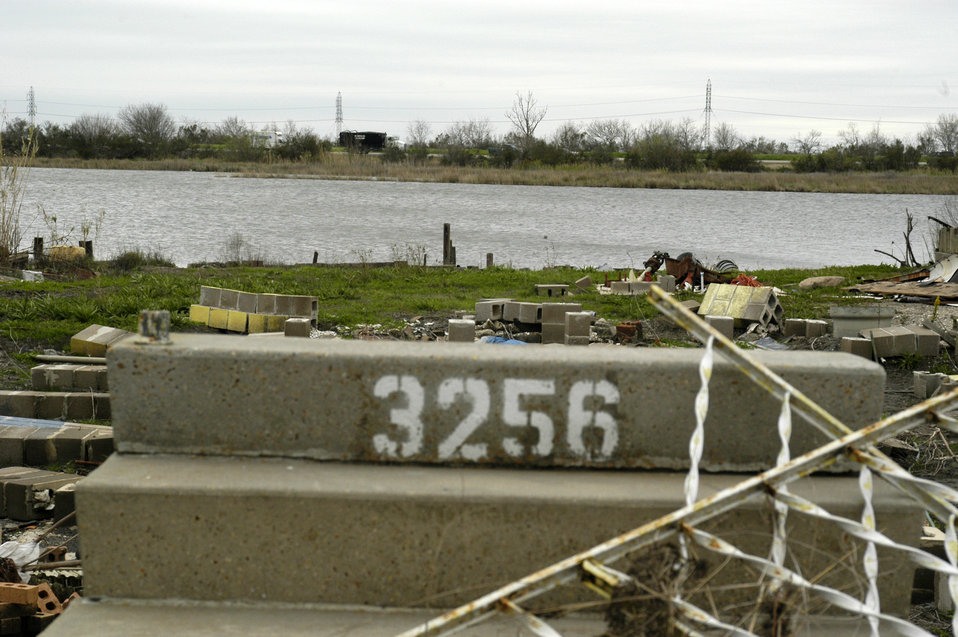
Homes built along the many canals in New Orleans, LA, were washed away by Hurricane Katrina’s 20-foot storm surge that overwhelmed the city’s levees. All that remained of this home was the cement steps leading to the front door. Hurricane Katrina was the 6th strongest hurricane in U.S. history and the 5th deadliest. Katrina made landfall on Monday morning, August 29, 2005 as a Category 3 hurricane with sustained winds of 125 mph with over a 20-foot storm surge. Katrina caused catastrophic damage over 90 thousand square miles across Louisiana with an estimated $75 billion dollars in damage. The total economic impact to the Gulf Coast was estimated at over $150 billion. 80% of New Orleans, LA, was underwater with some areas more than 20 feet deep. Less than a month later southern Louisiana was struck by a second Category 3 hurricane Rita inflicting more damage in the southwestern areas of Louisiana adding an addition $12 billion worth of damage to the already beleaguered state. The U.S. Army Corps of Engineers (USACE) under the auspices of FEMA was the lead service in providing assistance to the citizens of Louisiana. The U.S. Department of Agriculture (USDA) supplied emergency food aid, emergency loan assistance to farmers and home owners, and USDA personnel from around the nation volunteered their time and muscle to aid in the recovery operations.